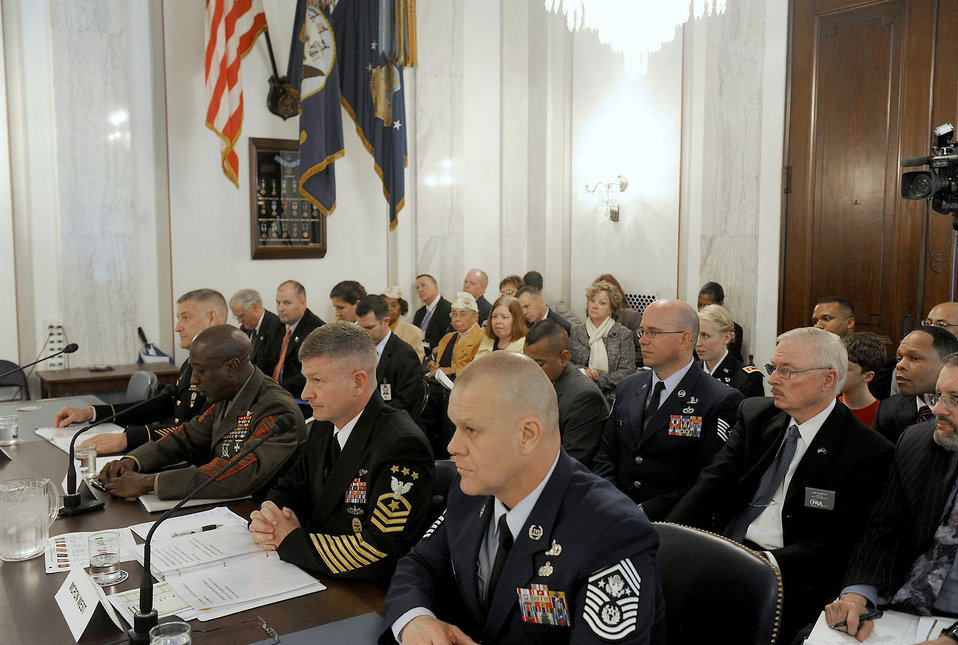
Chief Roy

Chief Master Sgt. of the Air Force James A. Roy (right) shares the witness stand while Sgt. Maj. of the Marine Corps Carlton Kent delivers his opening statement during a Senate Armed Services subcommittee hearing on military personnel issues April 13, 2011, in Washington. Also testifying were Sgt. Maj. of the Army Raymond Chandler III and Master Chief Petty Officer of the Navy Rick West.